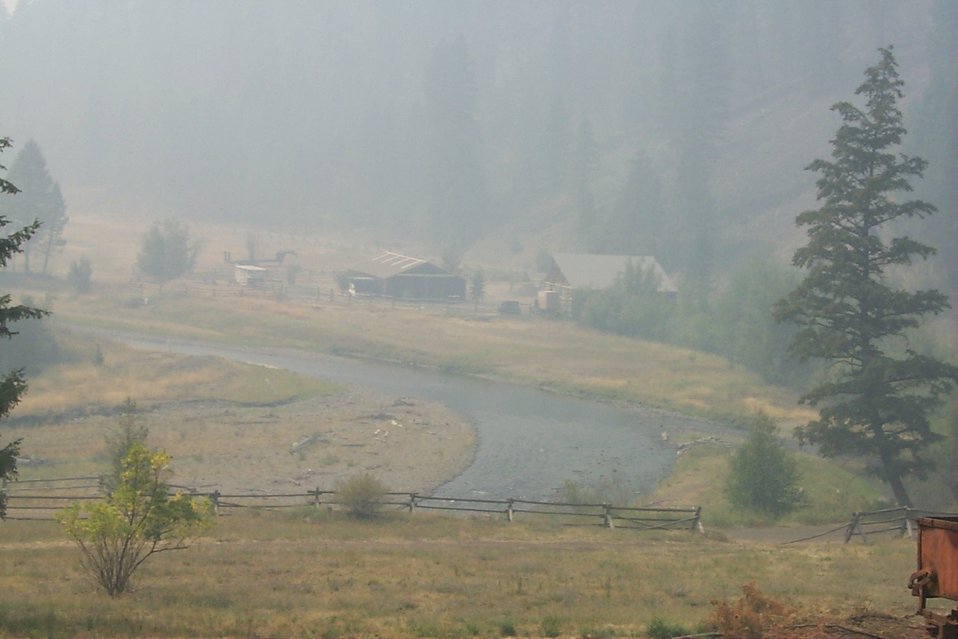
Salmon River Fire Clearwater Fire Salmon Field Office USRD Upper Snake River District